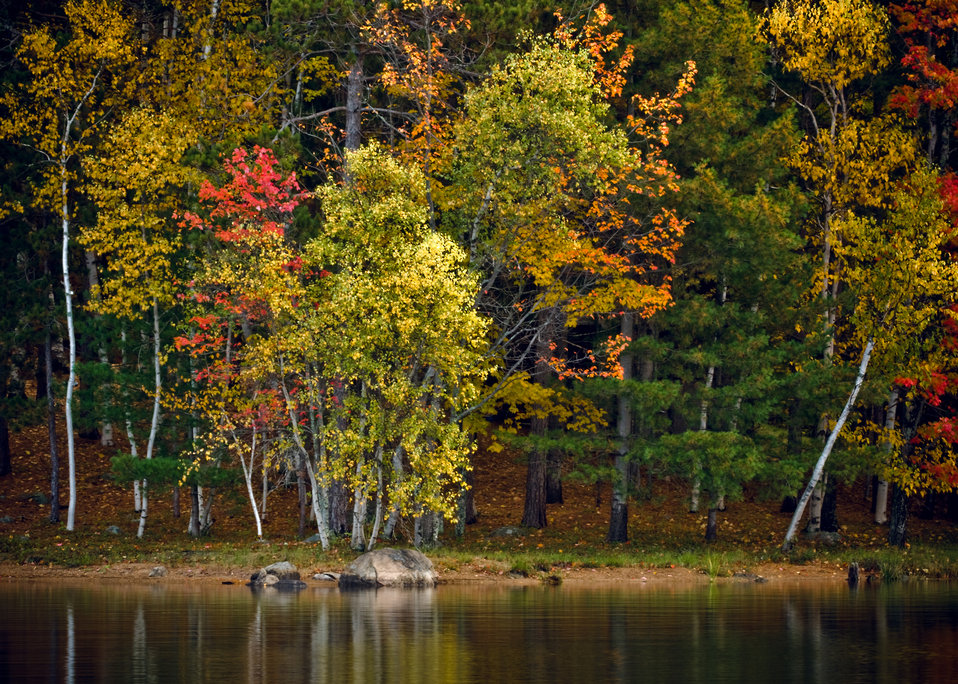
Color abounds along a lakeshore in the White Mountain National Forest in Maine.Fall is one of, or possibly the most popular season to visit the National Forests of United States.